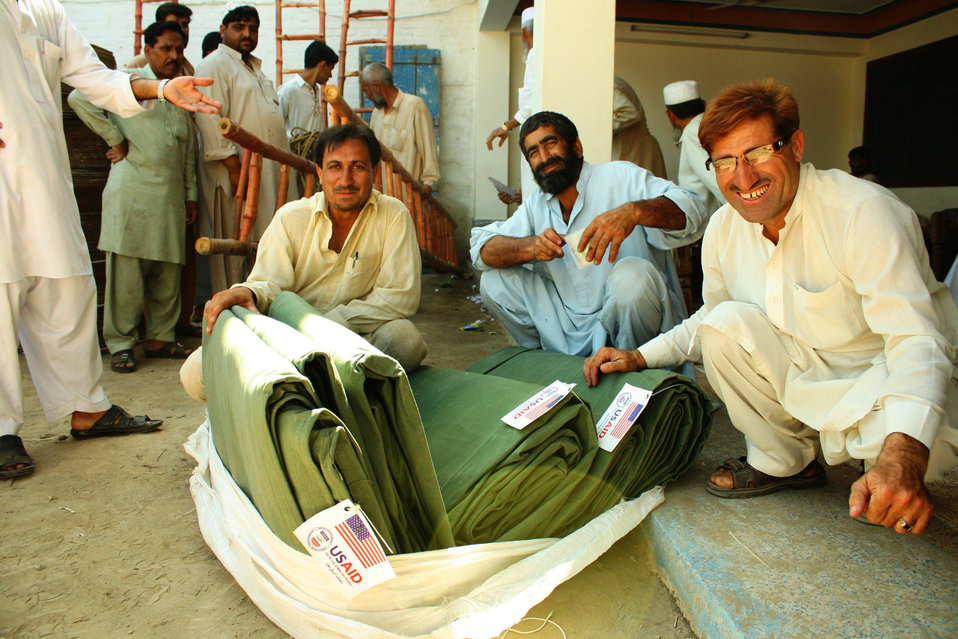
6. An expected 100 jobs will be created through this intervention with a yield increase per hectare of 10 percent for Year 1.